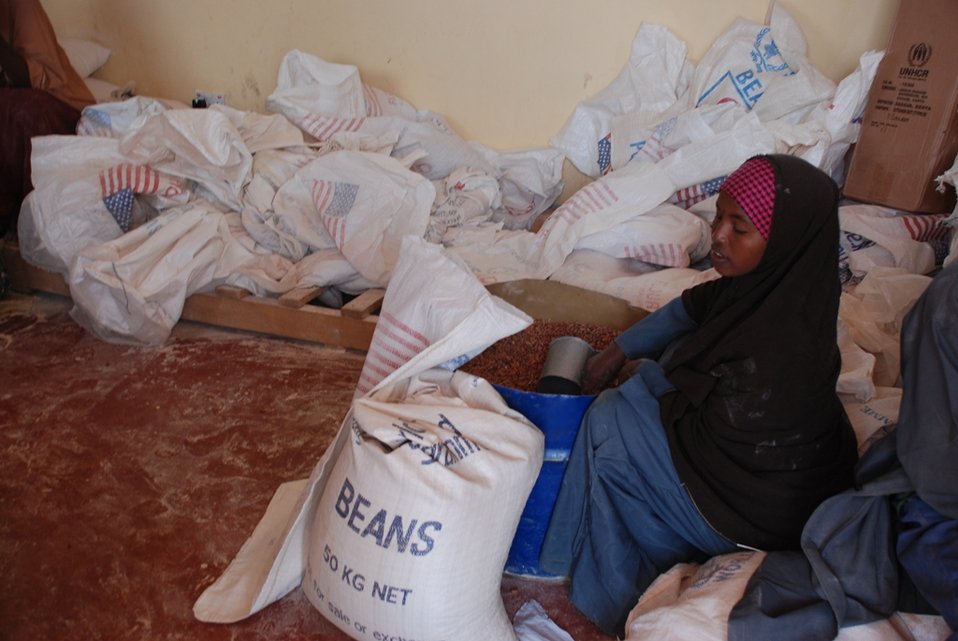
A Camp Worker in Dadaab, Kenya Prepares to Distribute Food Provided by the U.S.

In Dadaab, Kenya, a camp worker distributes food provided by the United States on July 13, 2011.